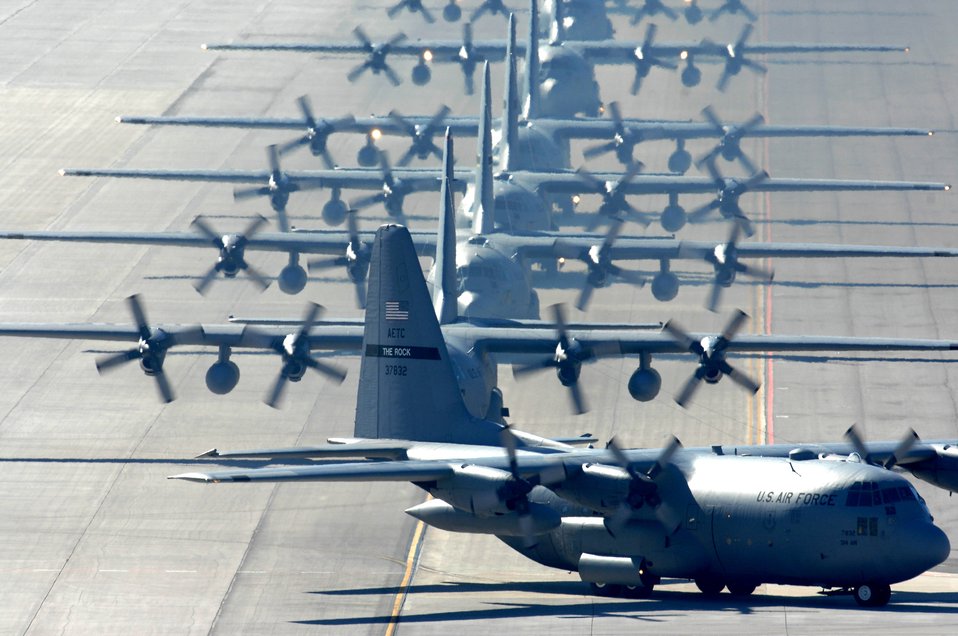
Mobility exercise

C-130 Hercules aircraft taxi to the parking ramp at Nellis Air Force Base, Nev., after completing airdrop missions for a mobility exercise over the Keno range in Nevada.